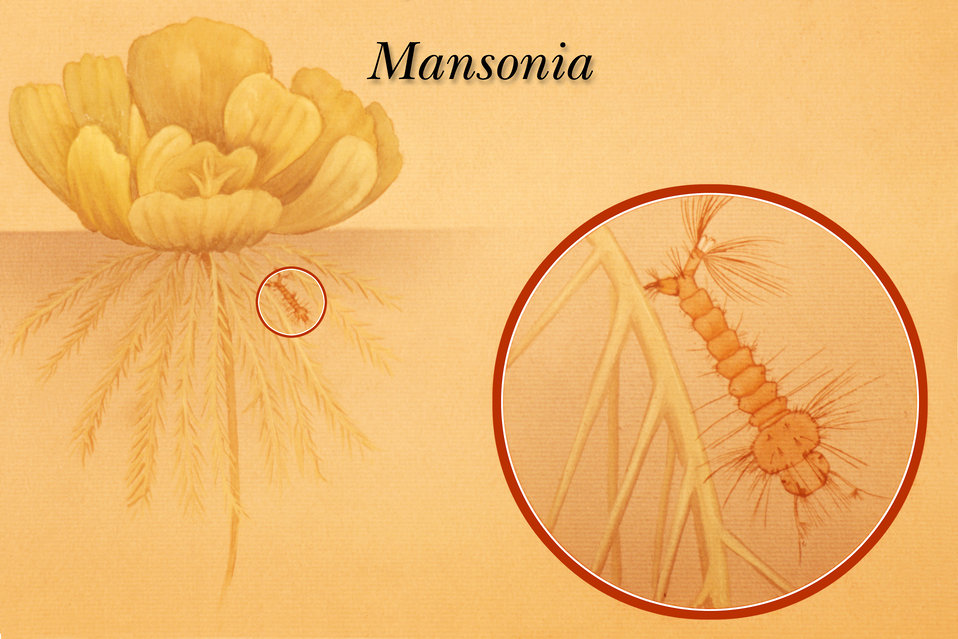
An illustration of a Mansonia mosquito larva attached to an aquatic plant beneath the water surface.